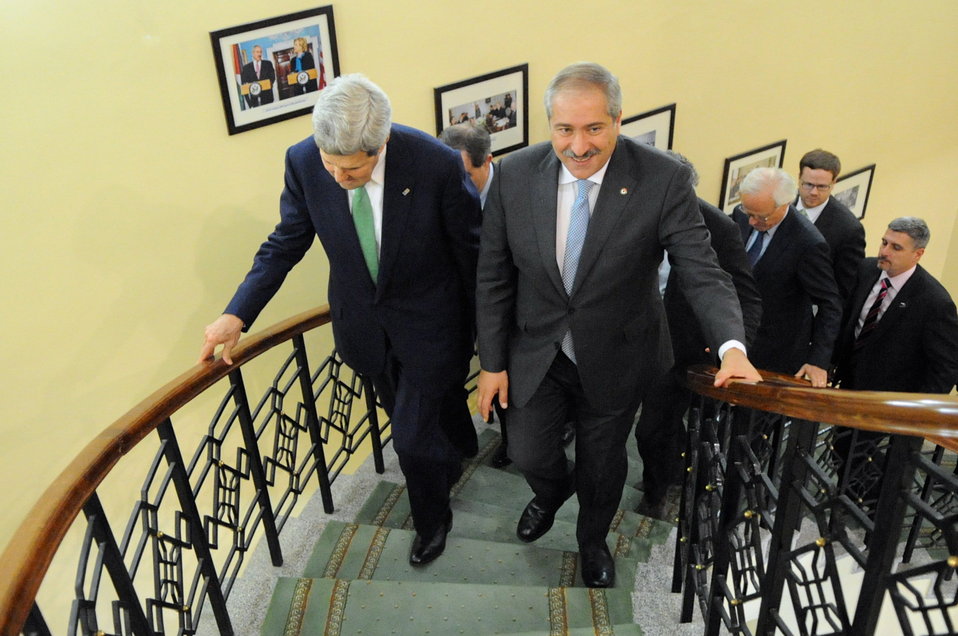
Jordanian Foreign Minister Judeh Welcomes Secretary Kerry

Jordanian Foreign Minister Nasser Judeh escorts U.S. Secretary of State John Kerry to his office in Amman, Jordan, on November 7 2013, for a working lunch focused on Middle East issues.